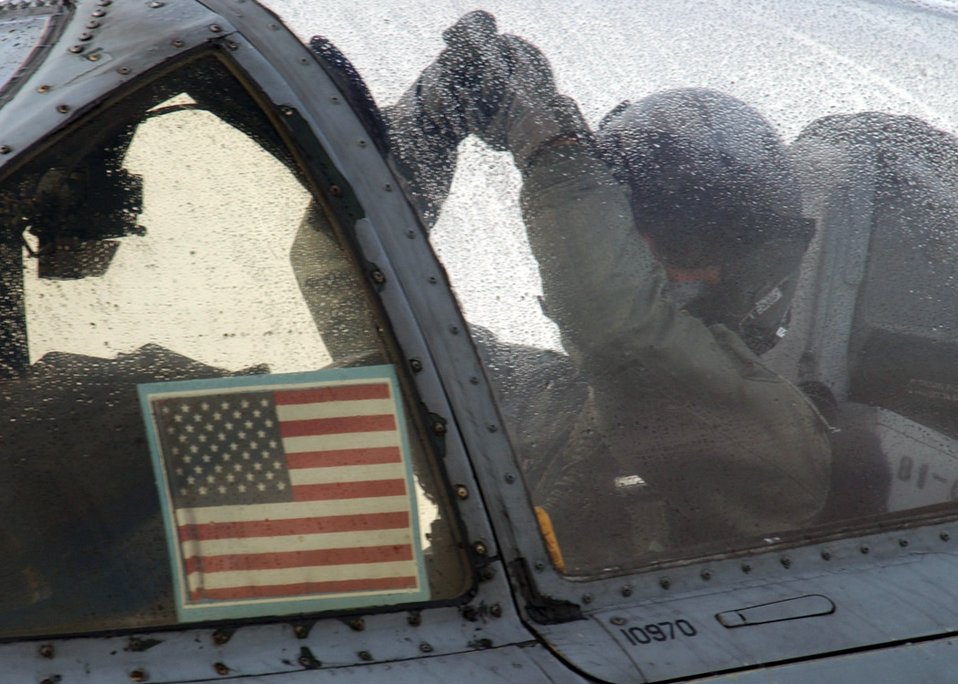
Taxi

EIELSON AIR FORCE BASE, Alaska -- First Lieutenant Michael Lewis taxis his A-10 Thunderbolt II for takeoff here Sept. 8. The 355th Fighter Squadron's primary mission includes air-strike control, close-air support, target interdiction, joint-air attack, combat escort and combat search and rescue.